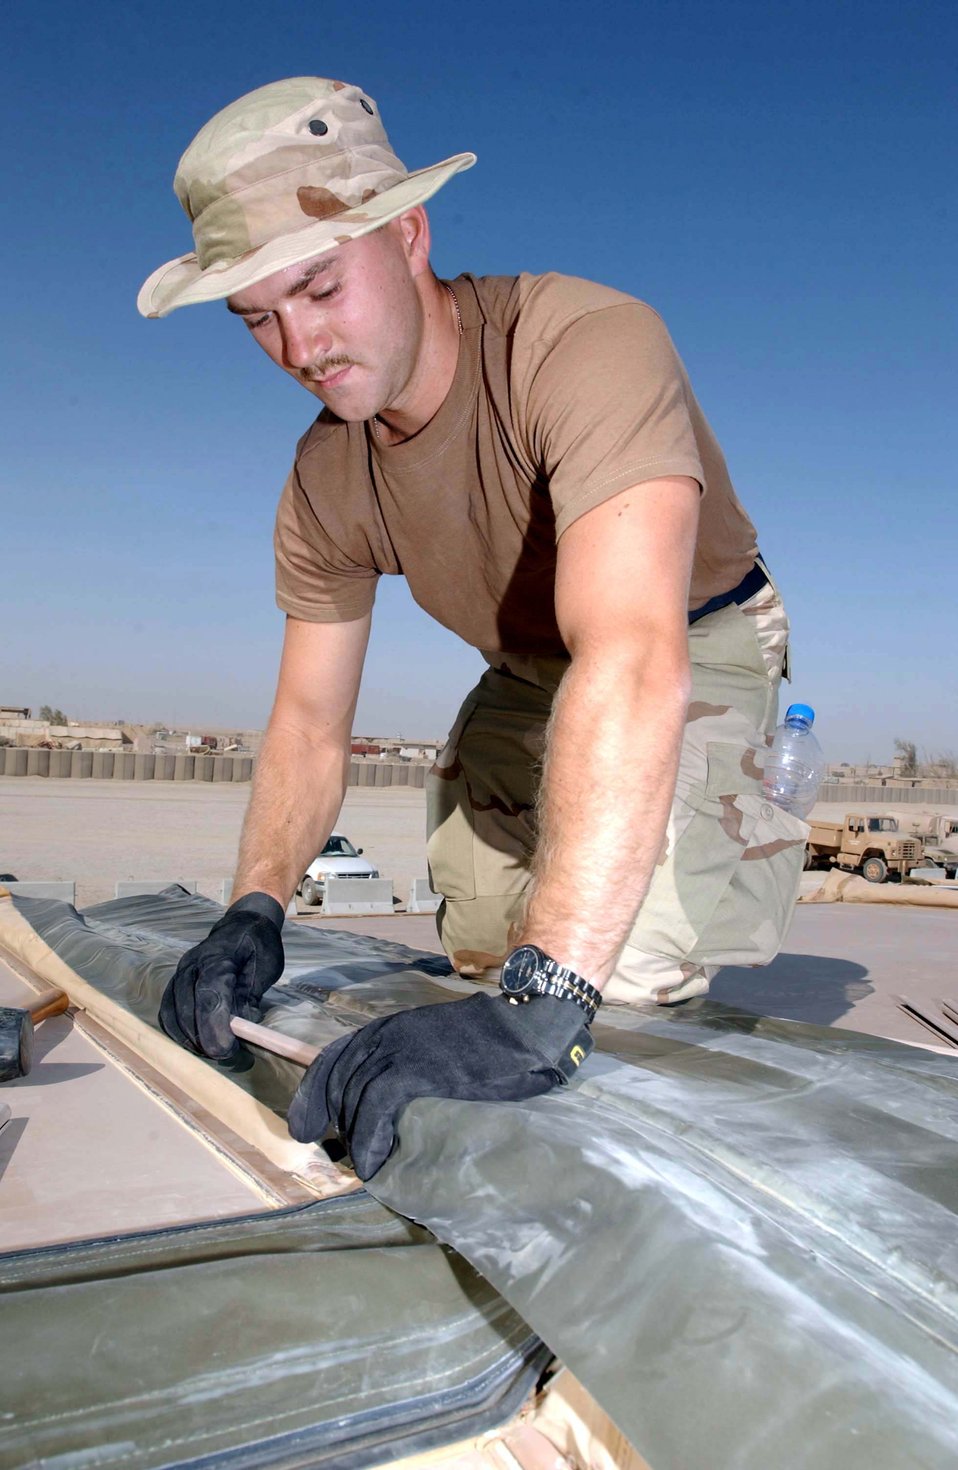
Building the BX

TALLIL AIR BASE, Iraq (AFPN) -- Senior Airman Jason Roush works on the roof of a small base exchange here. He is assigned to the 332nd Expeditionary Civil Engineer Squadron.